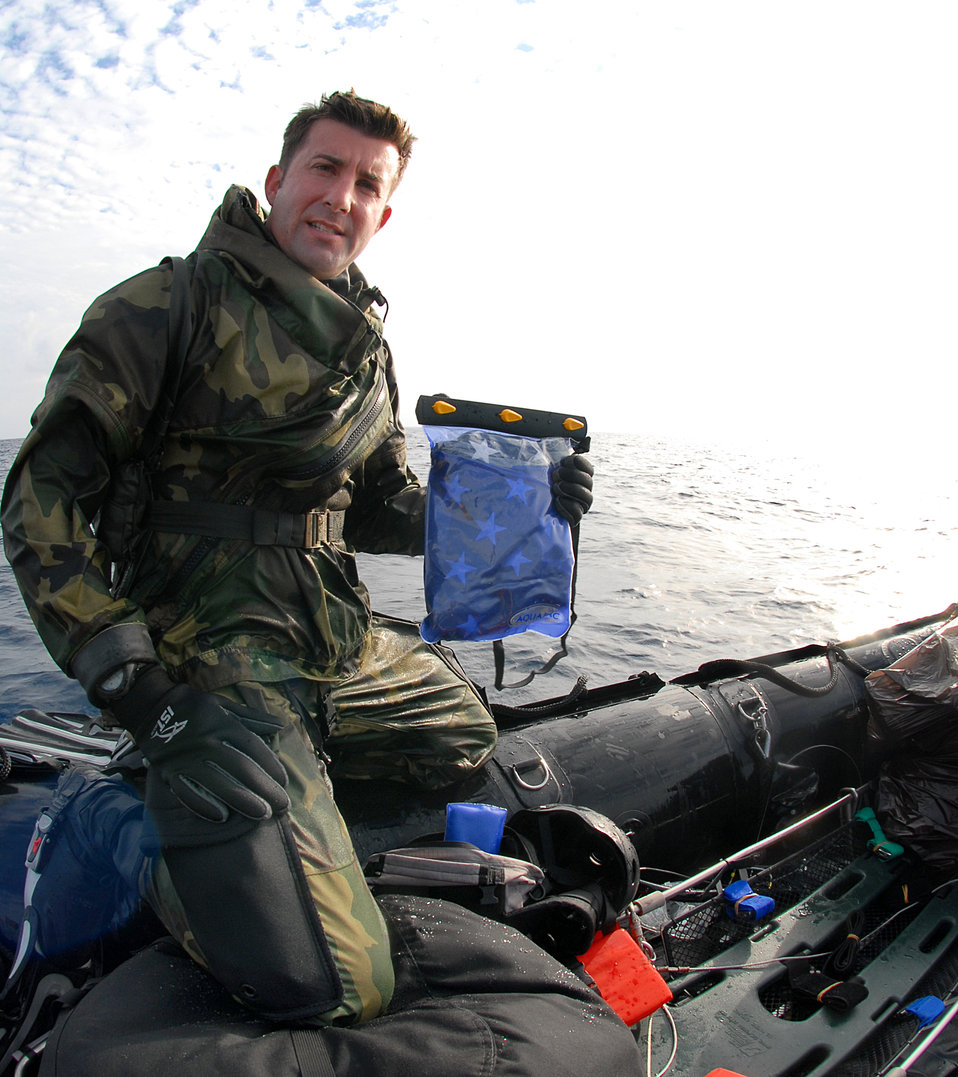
Combat Rescue

Capt. J. Harman, 31st Rescue Squadron, Kadena Air Base, Japan, holds two of the 4,500 flags that he volunteered to fly on the USS Arizona along with 39 volunteers this past Dec. 7 - the 65th Anniversary of Pearl Harbor. Capt. Harman wanted to jump into Okinawa with them to symbolize reuniting all of the fallen soldiers that never had the chance to fight with all the ones who fought on Okinawa. He is giving the two flags to his parents who are both veterans.